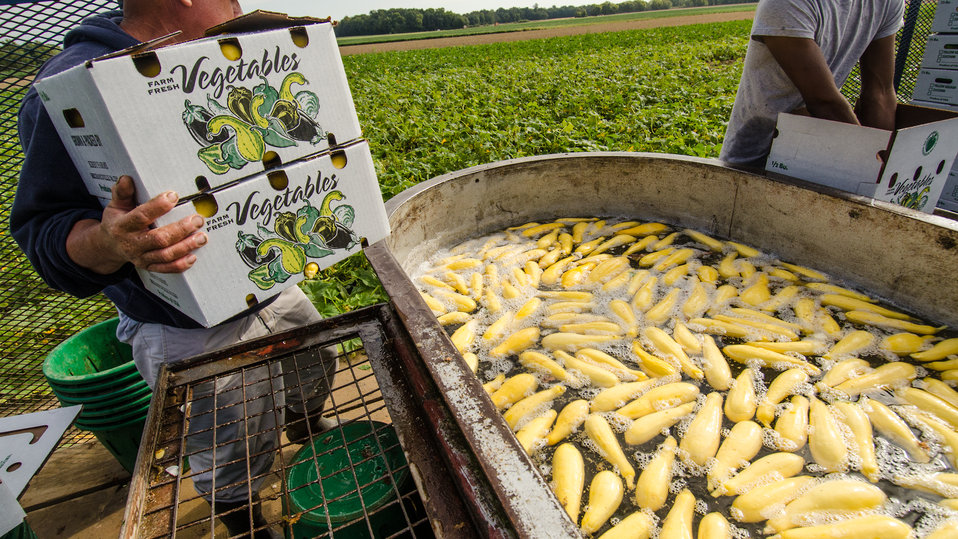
Migrant workers rinse and pack just-picked yellow squash on a processing trailer at Kirby Farms in Mechanicsville, VA on Sep. 20, 2013. Kirby Farms is a third-generation family farm that covers 500 acres, and generates produce and grains on a year-around operation.